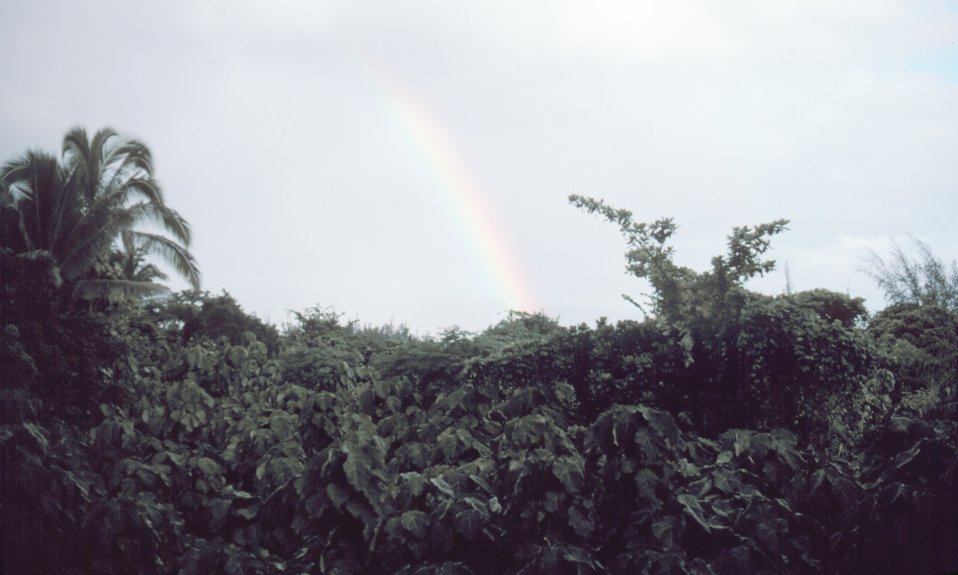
Rainbow over tropical foliage